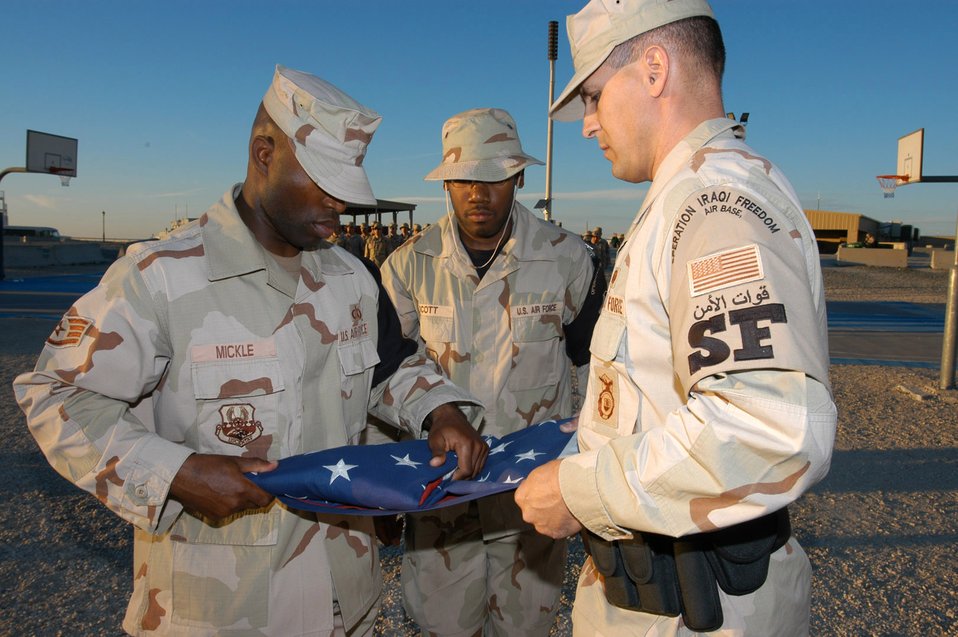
Deployed Airmen volunteer for honor guard

SOUTHWEST ASIA -- Staff Sgt. Denoris Mickle (left) and Senior Airman Cory Lenzmeir (right) fold the U.S. flag while Staff Sgt. Lydell Scott waits to receive the colors during a formal retreat ceremony at a forward-deployed location. The Airmen are members of the 386th Air Expeditionary Wing Honor Guard. The retreat ceremony is used to mark the end of the duty day and involves the lowering of both the U.S. and host nation flags.